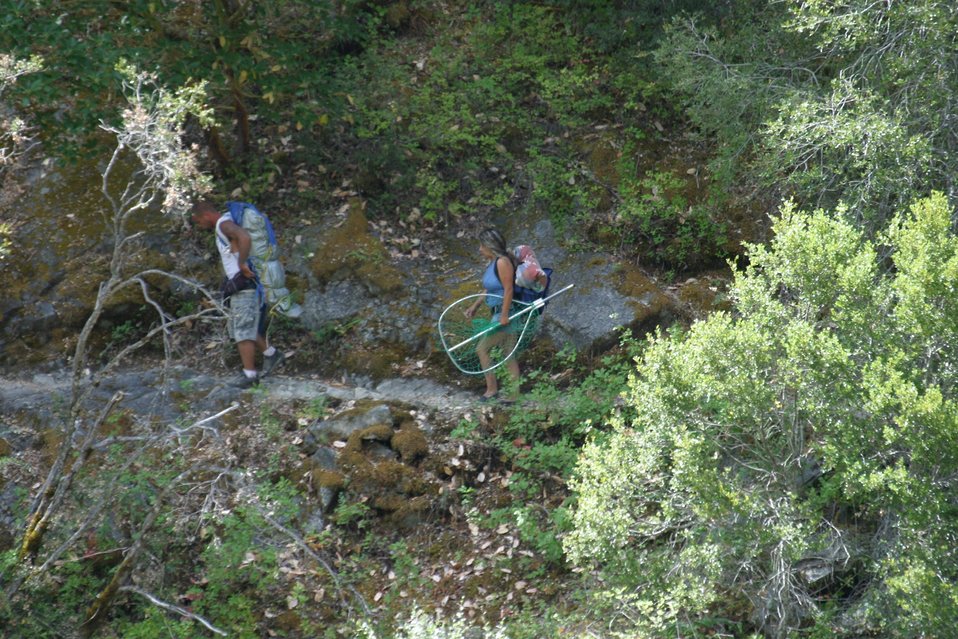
Anglers carring out their catch on the Rainie Falls Trail.